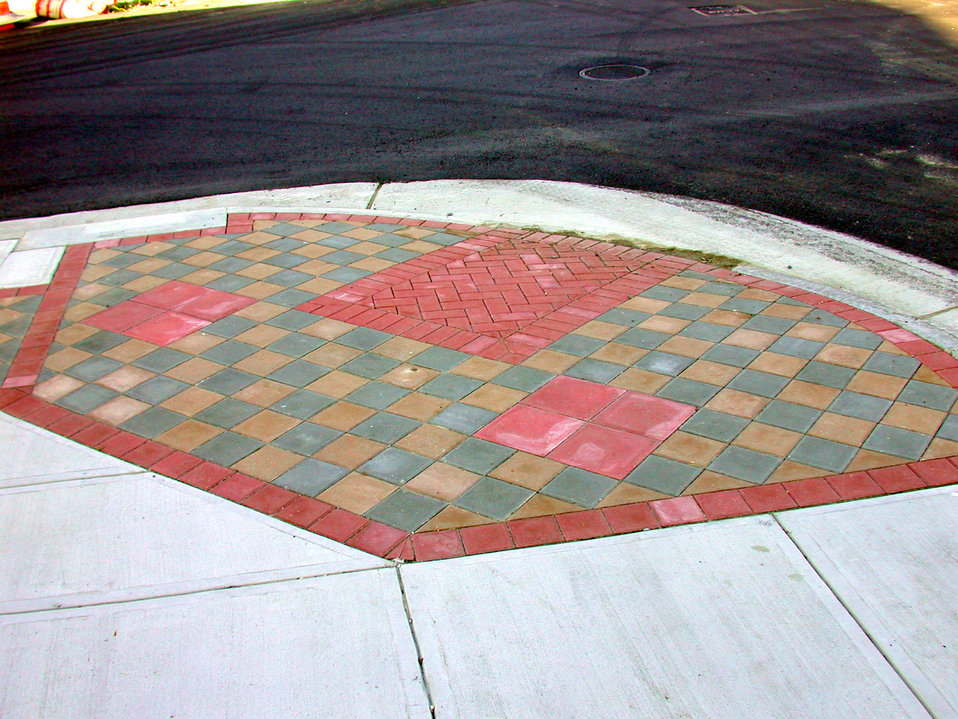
This 2005 image depicted the installation of a colorful, textured 'curb ramp', which provided a transition point between the roadway at a lower level, and the sidewalk that was at a higher level. The curb ramp alleviated having to lift belongings up, and on to the sidewalk, therefore, would be highly beneficial to the mobility-challenged, as well as those encumbered with a stroller, shopping cart, baby carriage, etc. In this particular case, the colorful, environmentally-attractive patterning belied the fact that this was constructed in this manner for a reason. The sloped areas of the curb ramp contrasted significantly with both the sidewalk, and the asphalt paving. A subtle checkerboard pattern, plus additional tonal differences gave cues to pedestrians in wheelchairs of the curb ramp's location. The patterned area had some textural differentiation so blind pedestrians with walking sticks could perceive the ramp and its changing slope.